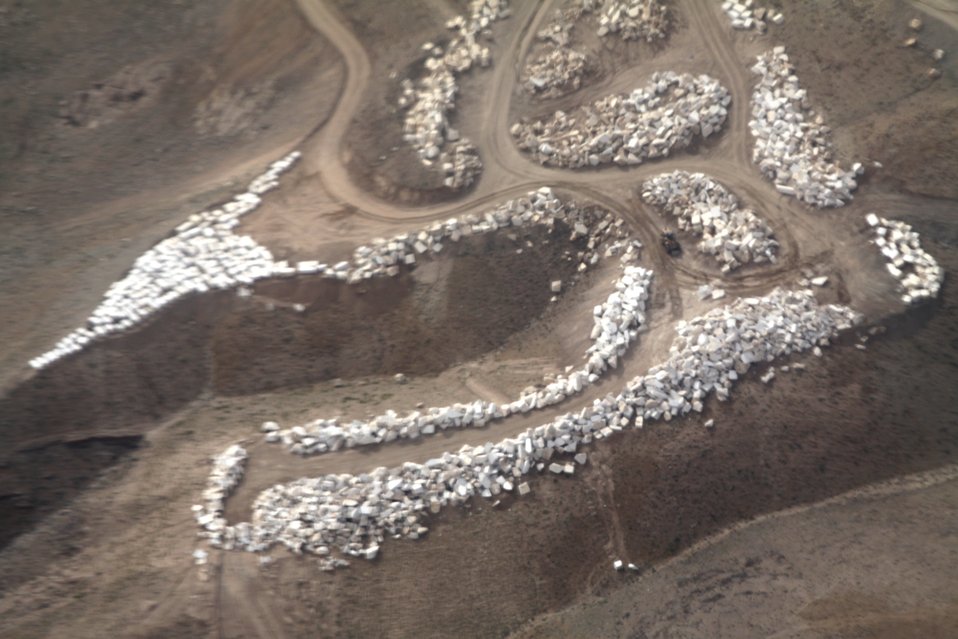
100525 Hirat Marble Conference 020